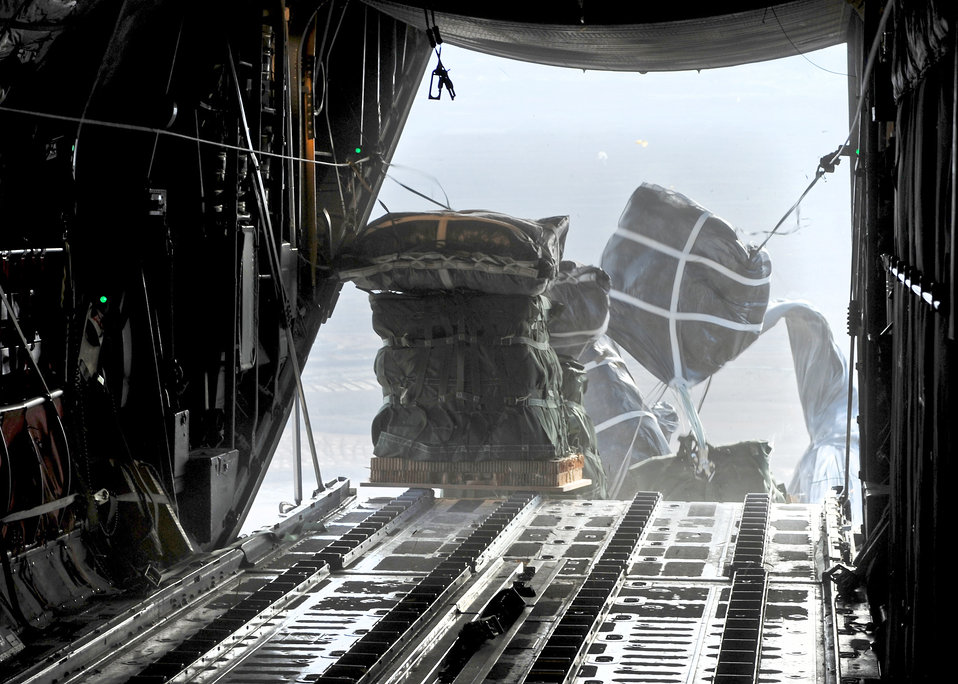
386th AEW members fly first airdrop missions in Afghanistan

Supplies are dropped to ground forces in Afghanistan from the back of a C-130 Hercules Nov. 21, 2010, during a mission performed by the 737th Expeditionary Airlift Squadron. The event validated the unit's ability to perform airdrop missions in support of Operation Enduring Freedom.